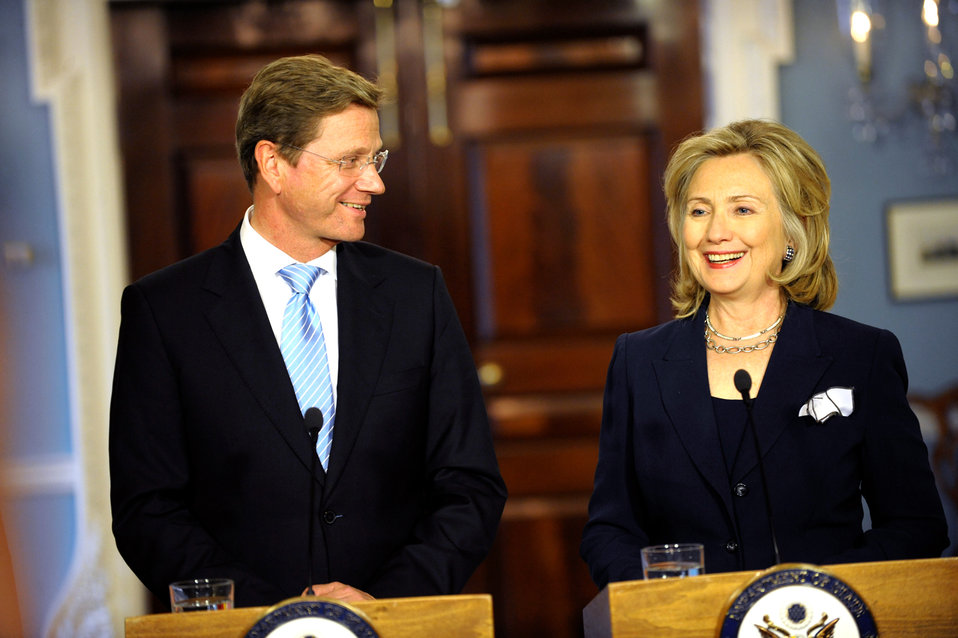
Secretary Clinton Delivers Remarks With German Foreign Minister Westerwelle

U.S. Secretary of State Hillary Rodham Clinton delivers remarks with German Foreign Minister Guido Westerwelle at the U.S. Department of State in Washington, D.C., on September 29, 2010.